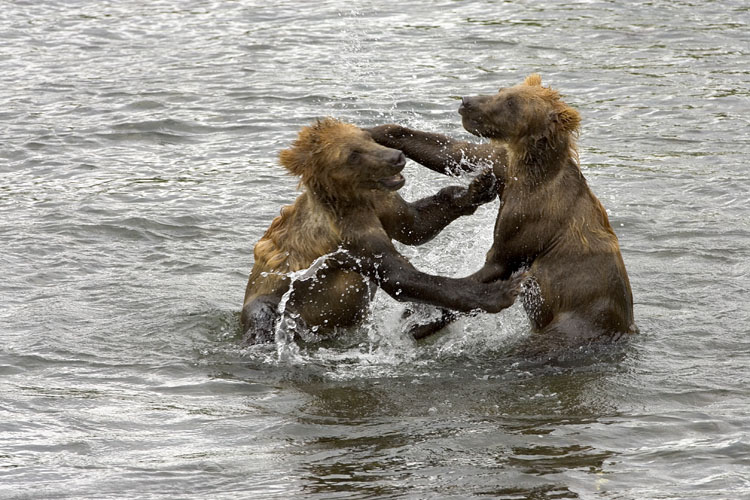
KOD Hildebrand (33)

Kodiak National Wildlife Refuge- Wildlife